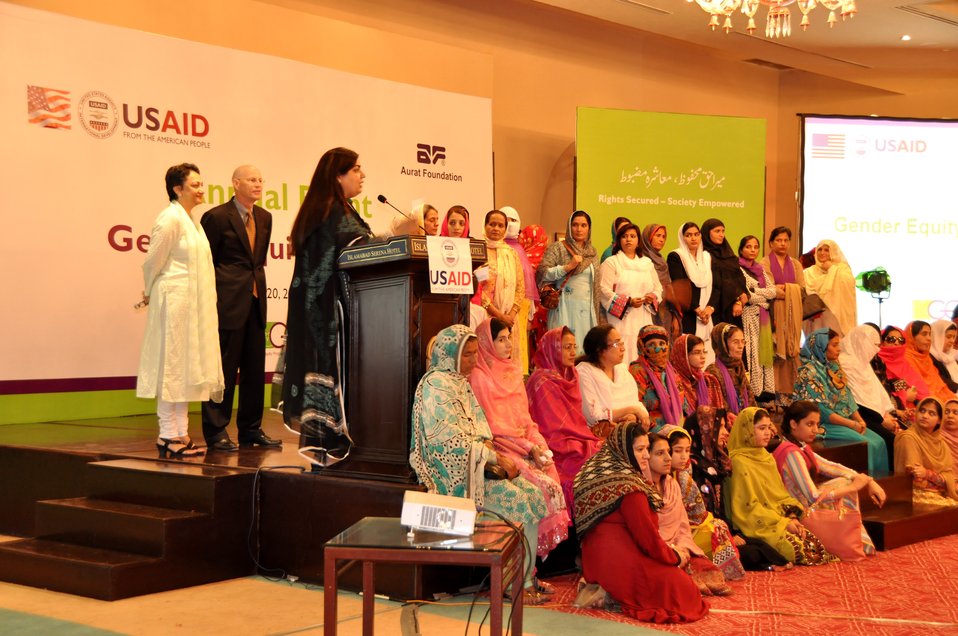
September 20, 2013- Annual Event- Gender Equity Program titled as “Rights Secured – Society Empowered”